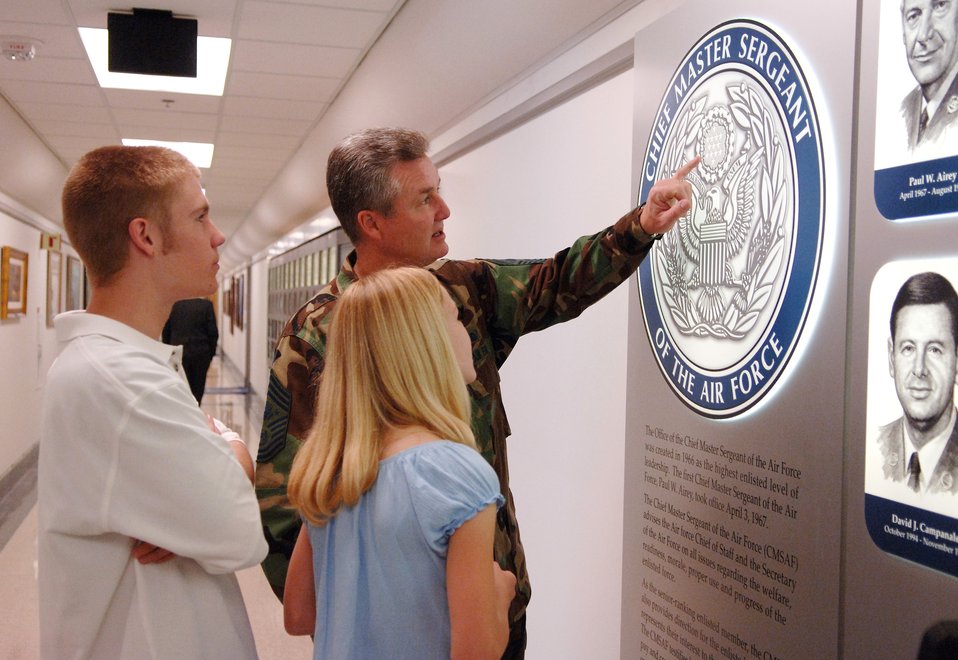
CMSAF Murray enjoys day at work with his children

Chief Master Sgt. of the Air Force Gerald R. Murray explains the significance of each part of the emblem outside his Pentagon office to his daughter Elizabeth, 10, and his son Stephen, 17, on Thursday, April 27, 2006. Chief Murray brought Elizabeth and Stephen to the Pentagon for the National Take Our Daughters and Sons to Work Day.